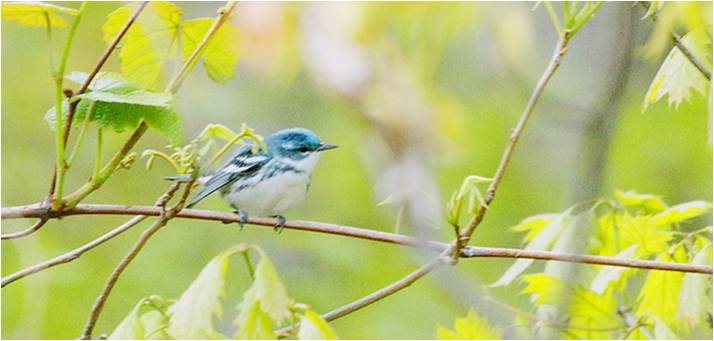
Cerulean Warbler